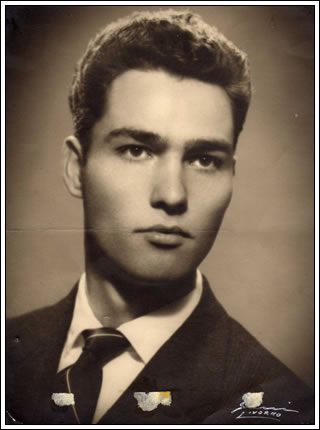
Italiano: Gianni Picchi